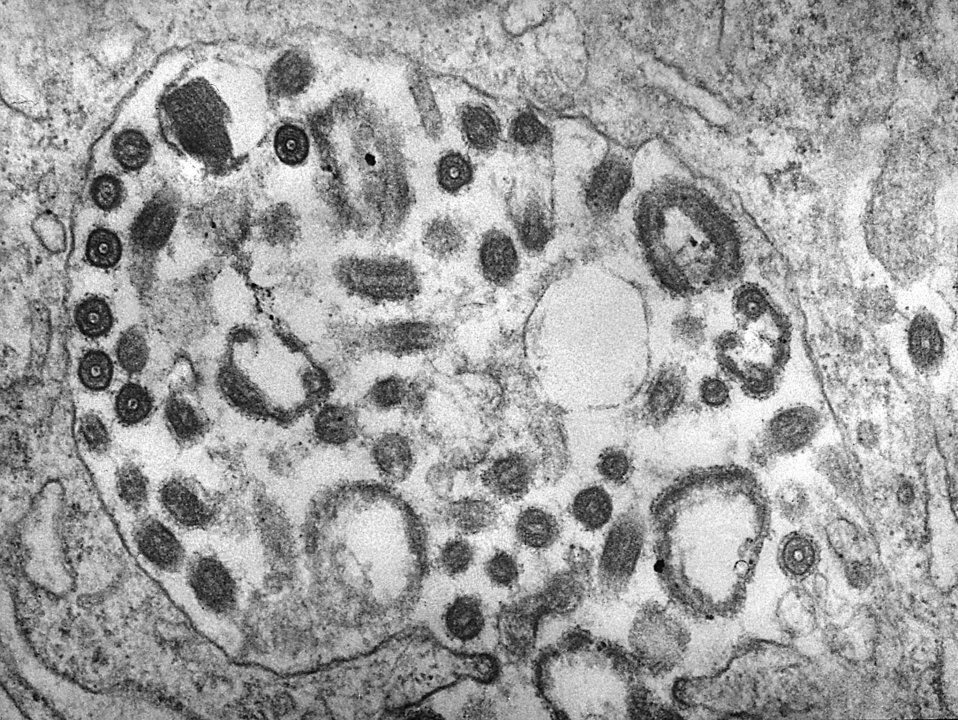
Electron micrograph of the Marburg virus.